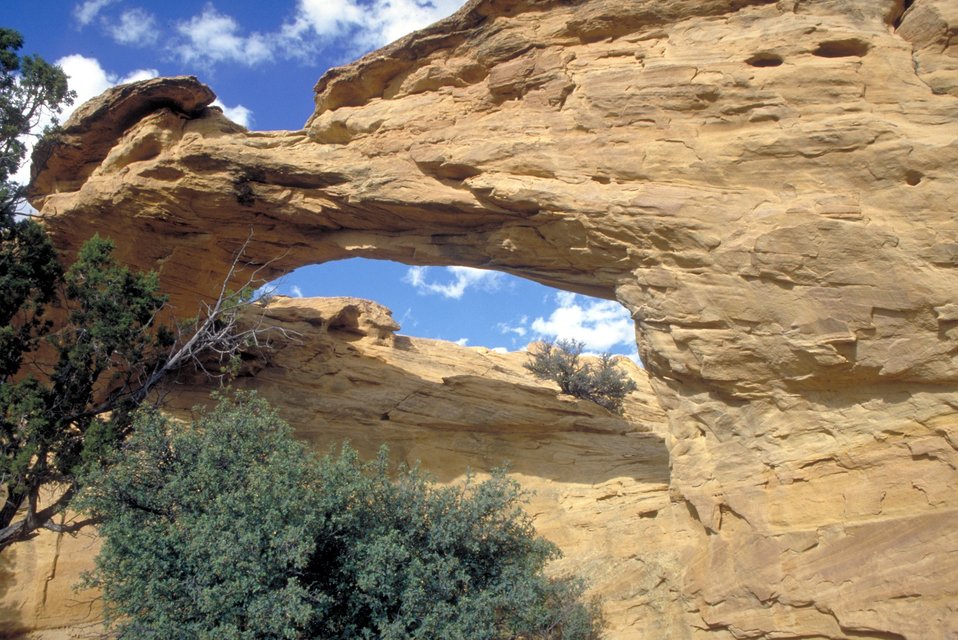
Dutchmans Arch,Head of Sinbad in the San Rafael Swell